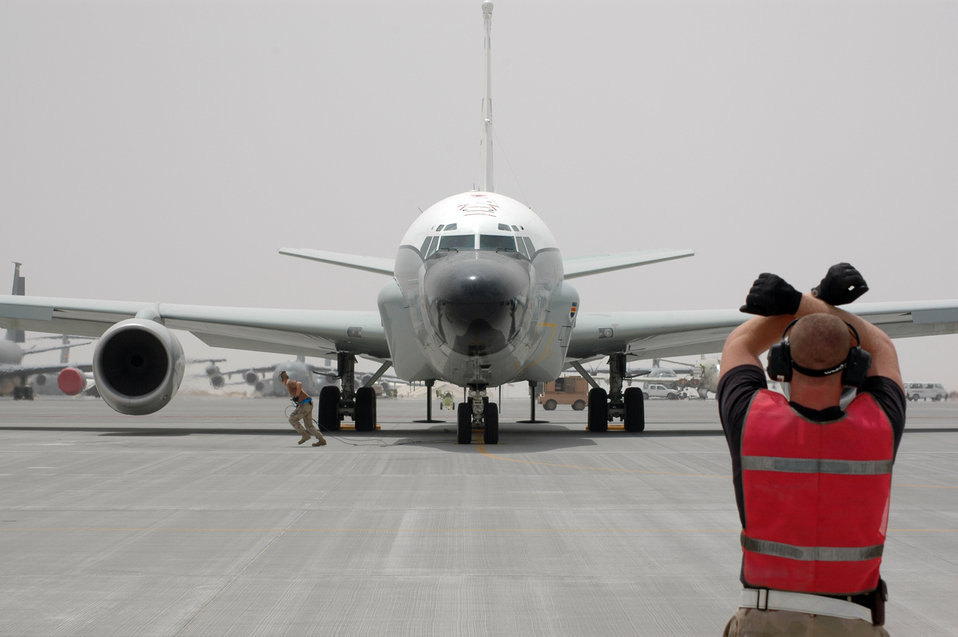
Airmen keep a step ahead of enemy

Staff Sgt. Cheyenne Bode, an electrical and environmental craftsman, stands ready to marshal a RC-135 V/W Rivet Joint out from its parking space April 4 for a mission in Southwest Asia. Sergeant Bode is assigned to the 379th Expeditionary Aircraft Maintenance Squadron's 55th Aircraft Maintenance Unit.